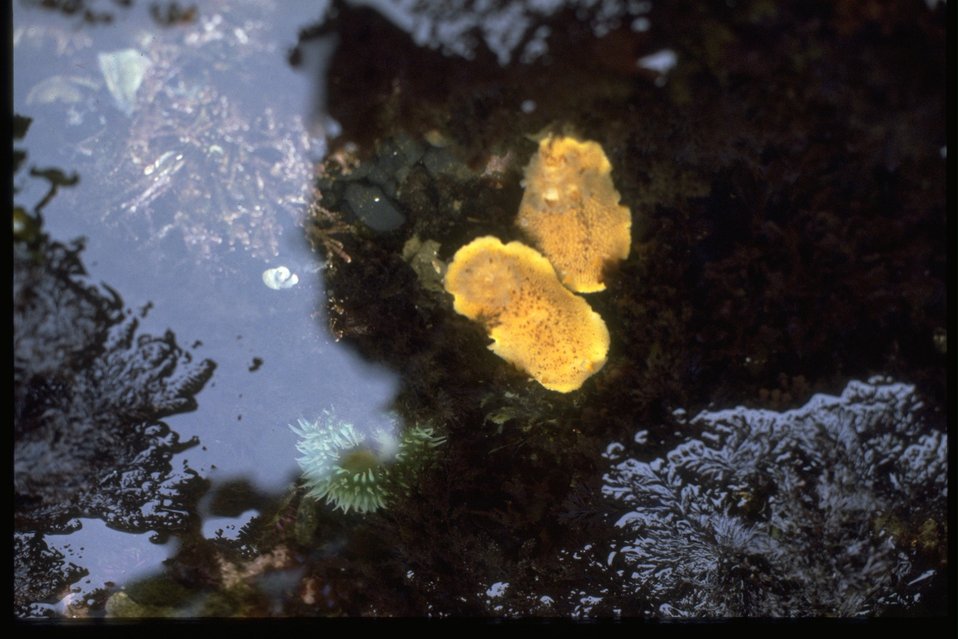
A sea lemon found at the Yaquina Head ONA.